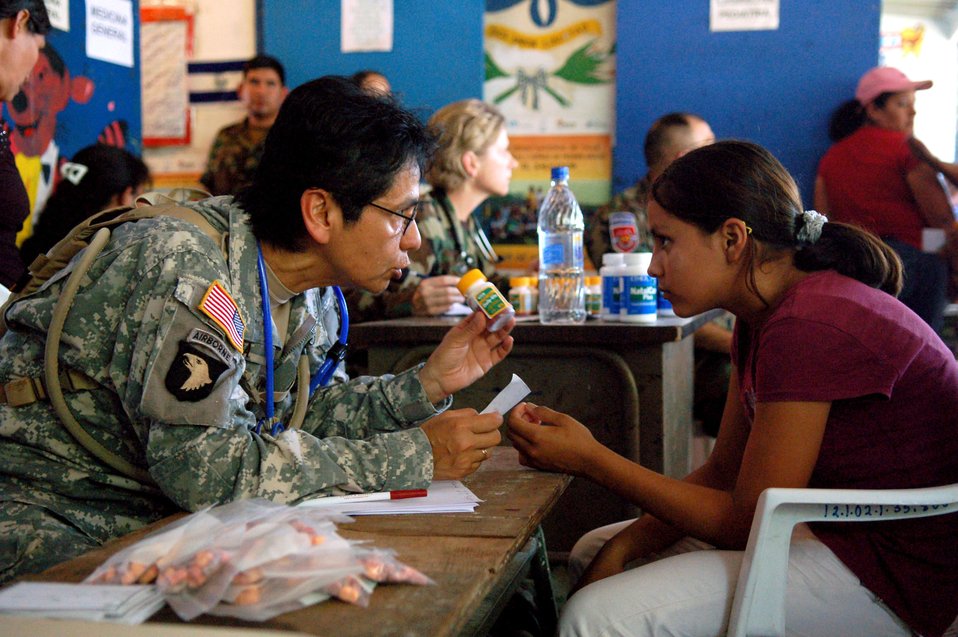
JTF-Bravo participates in El Salvador MEDRETE

Army Capt. Marta Artiga explains multivitamin dosage directions to 13-year-old Gabriela Alejandra Sept. 27 at a makeshift clinic in San Juan Opico, El Salvador, during a medical readiness training exercise. Captain Artiga is a member of the Joint Task Force-Bravo Medical Element. JTF-Bravo members participated with the Salvadorian militaries in the exercise.